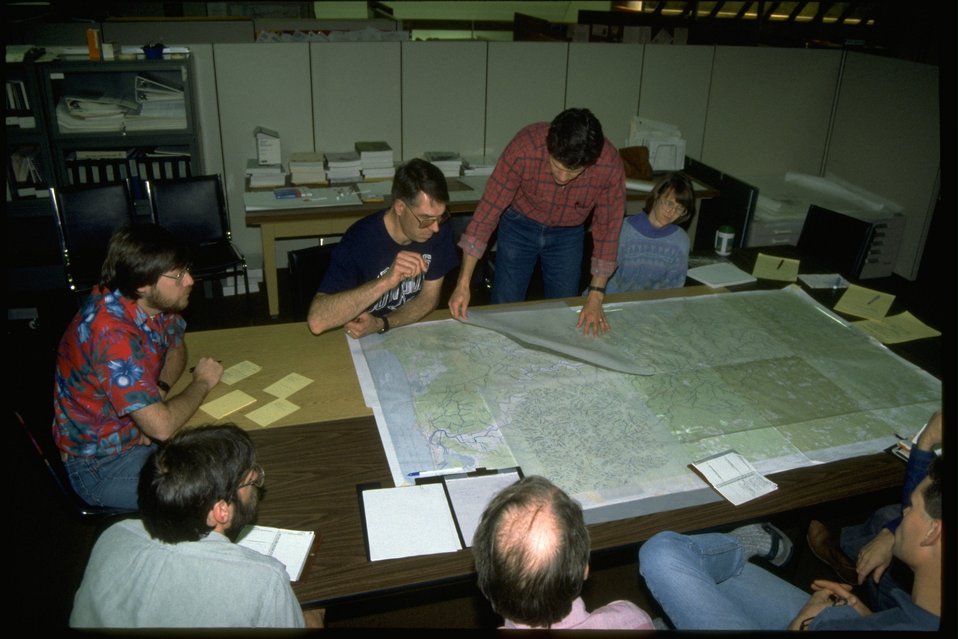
A planning Meeting.